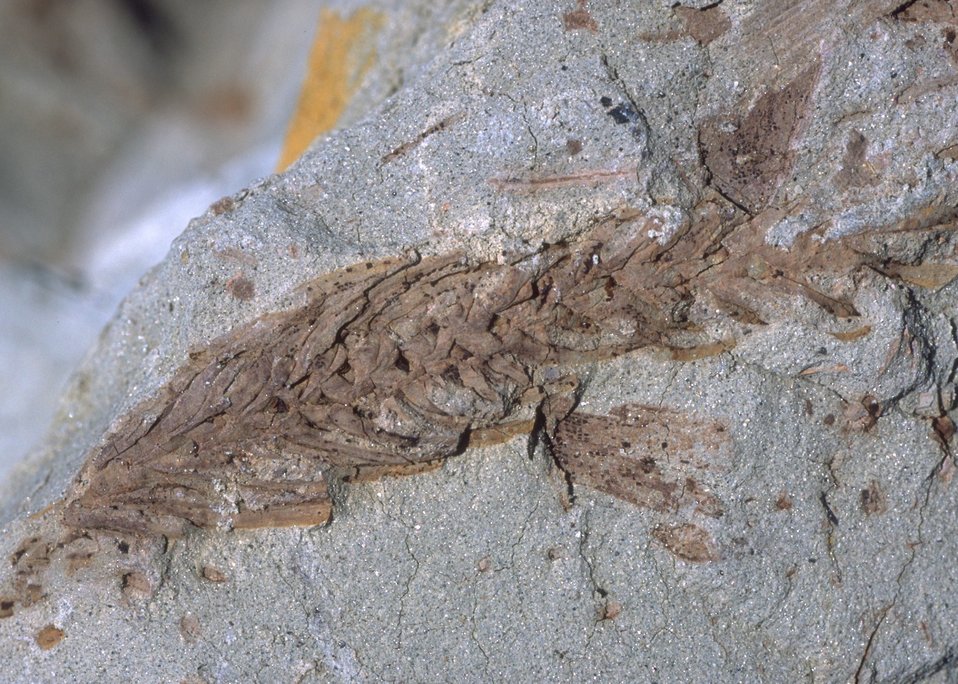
Close up of fossil vegetation, Cedar Ridge Paleo area, Worland Field Office.